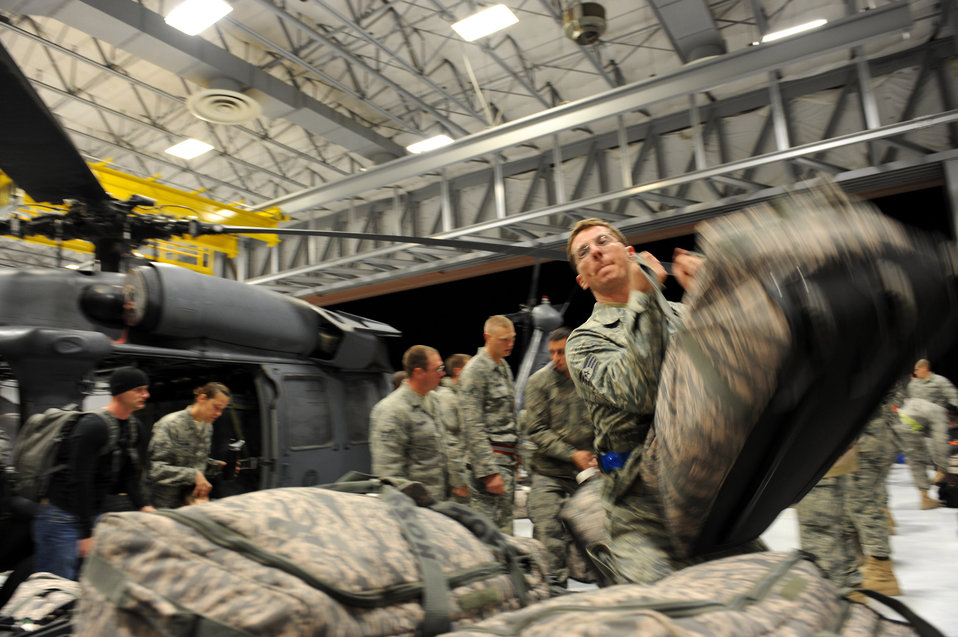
Home for the holidays

Technical Sgt. David Brown hauls mobility bags from the units recent deployment Dec. 6 at Nellis Air Force Base, Nev. Airmen with the 763rd Maintenance Squadron and 66th Rescue Squadron returned home after 3.5 months in Southwest Asia supporting the war on terrorism. Sergeant Brown is a flightline expeditor assigned to the 763rd MXS.